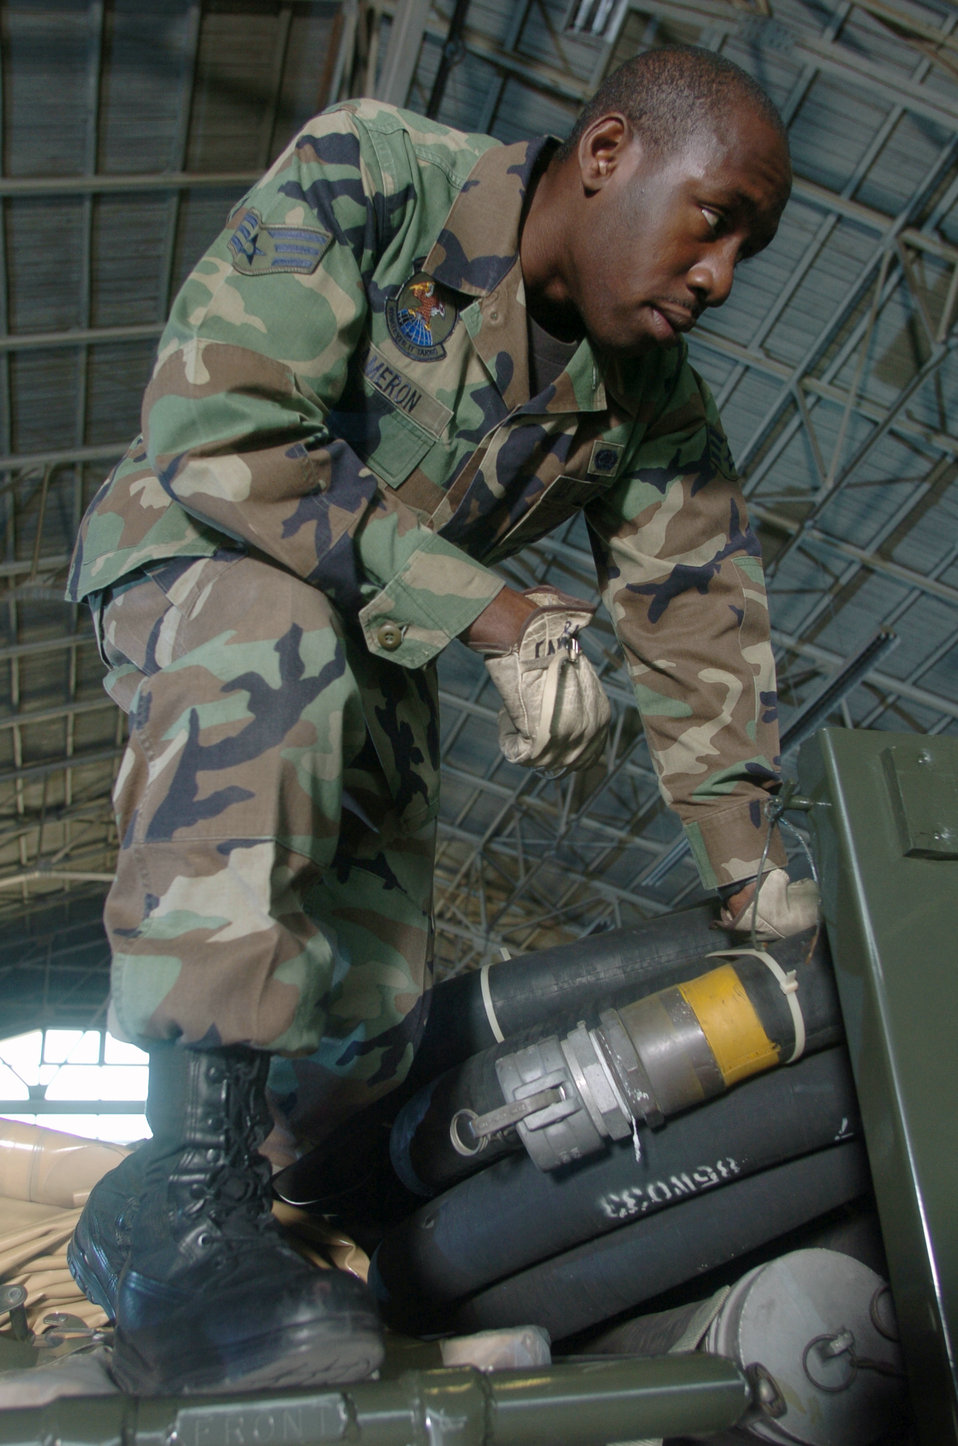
Yokota fuels specialists support global missions

YOKOTA AIR BASE, Japan -- Senior Airman David Cameron prepares to replace cargo straps on an R-14 air transportable hydrant refueling system during an inspection here. The R-14 can be airlifted or ground shipped anywhere in the world and made fully operational in a matter of hours. Each unit contains a pump; two 50,000-gallon bladder tanks; and all the hoses, valves, and fittings necessary for operation. Airman Cameron is assigned to the 374th Logistics Readiness Squadron's fuels mobility support equipment element.